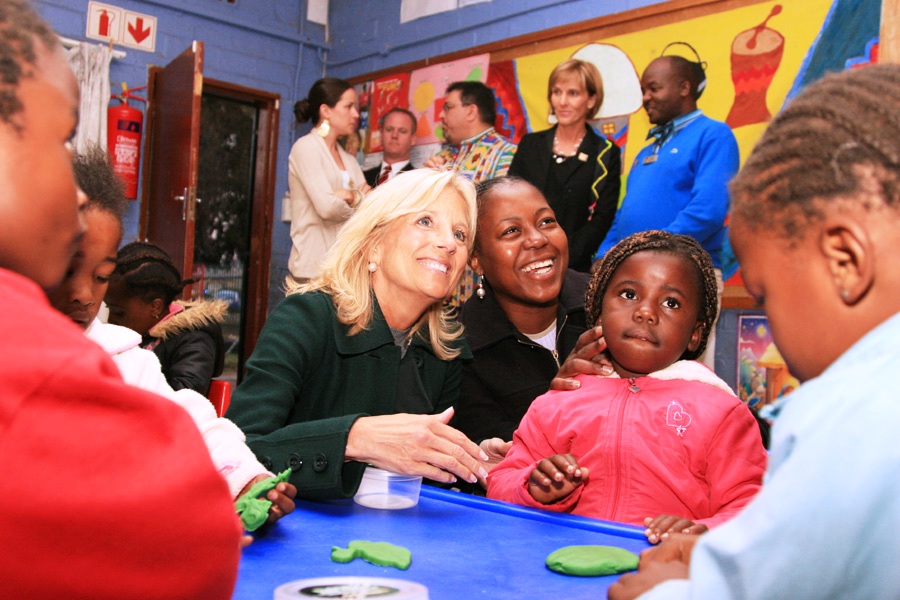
Dr. Jill Biden Interacts With Children

Dr. Jill Biden, wife of Vice President Joseph Biden, interacts with children during her visit to Mapetla Day Care Centre in Soweto, Johannesburg, South Africa, on June 10, 2010.